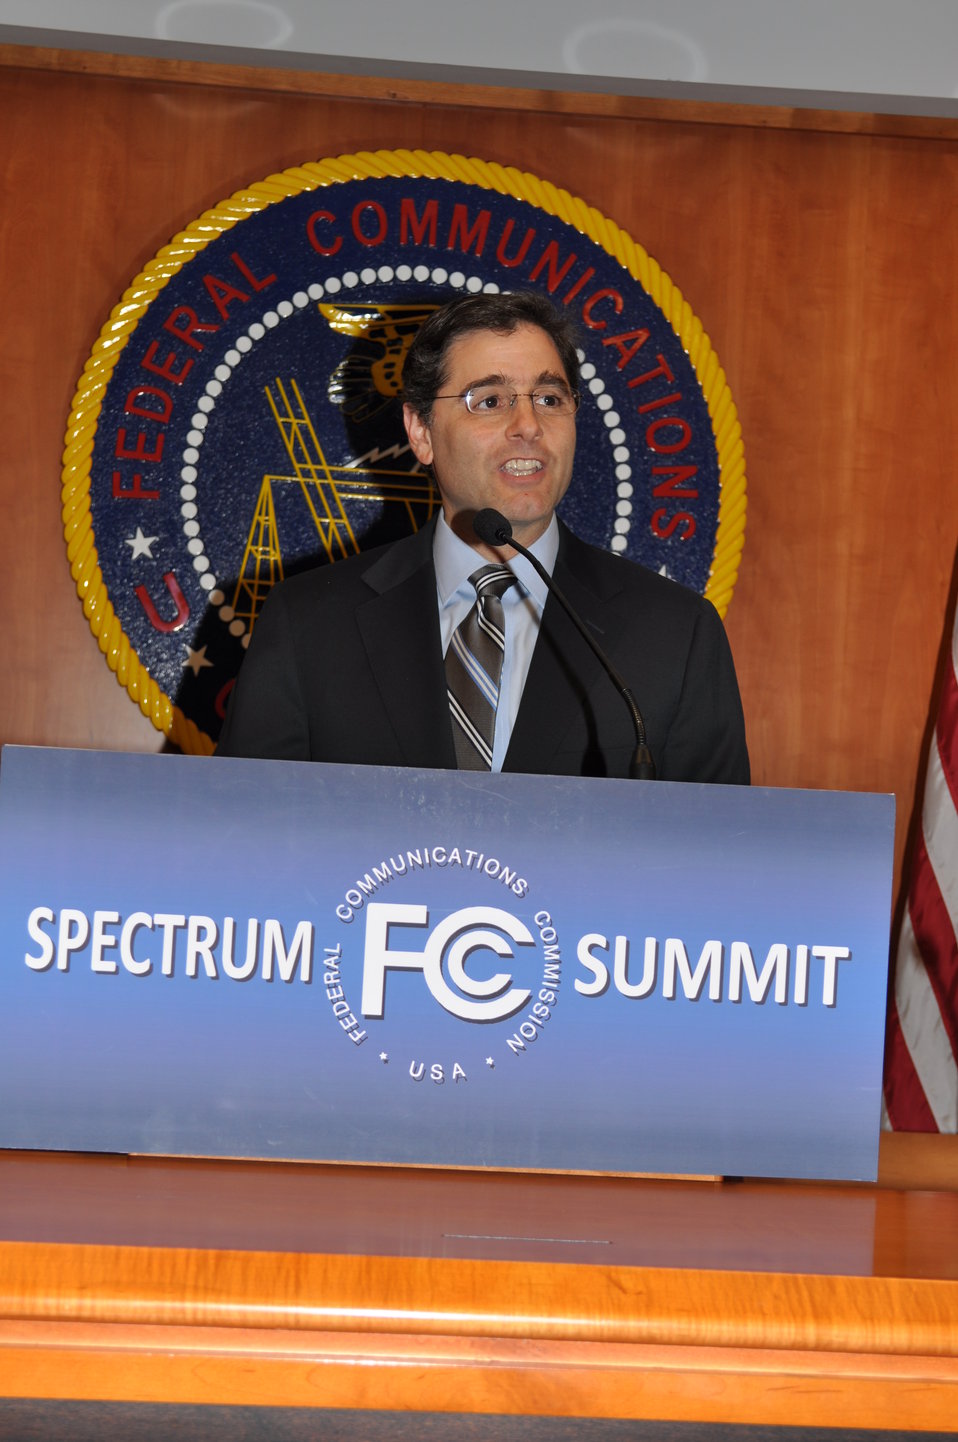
Spectrum Summit